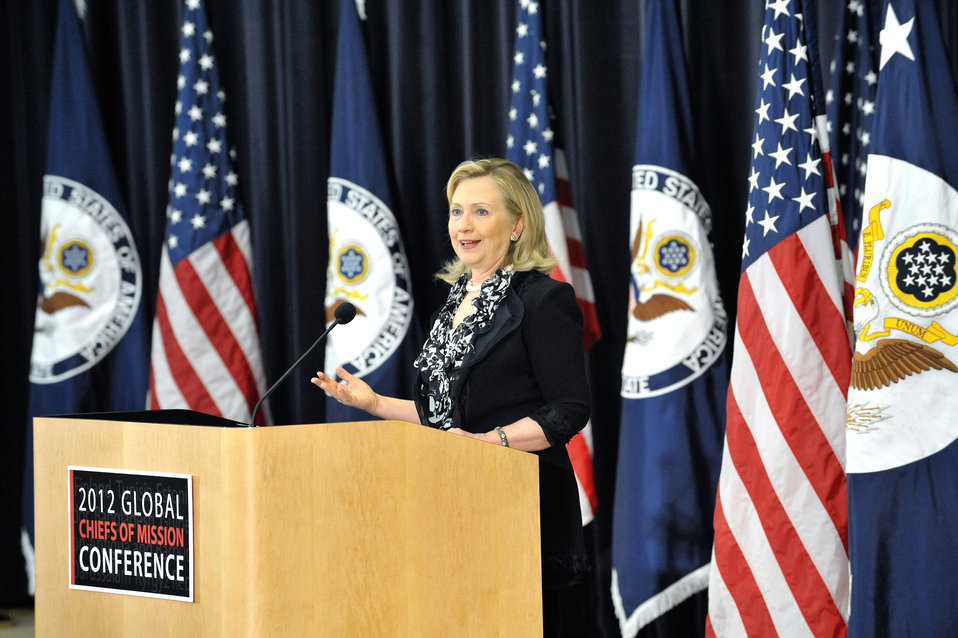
Secretary Clinton Addresses the 2012 Chiefs of Mission Conference

U.S. Secretary of State Hillary Rodham Clinton delivers remarks to the 2012 Chiefs of Mission Conference at the U.S. Department of State in Washington, D.C., on March 13, 2012.